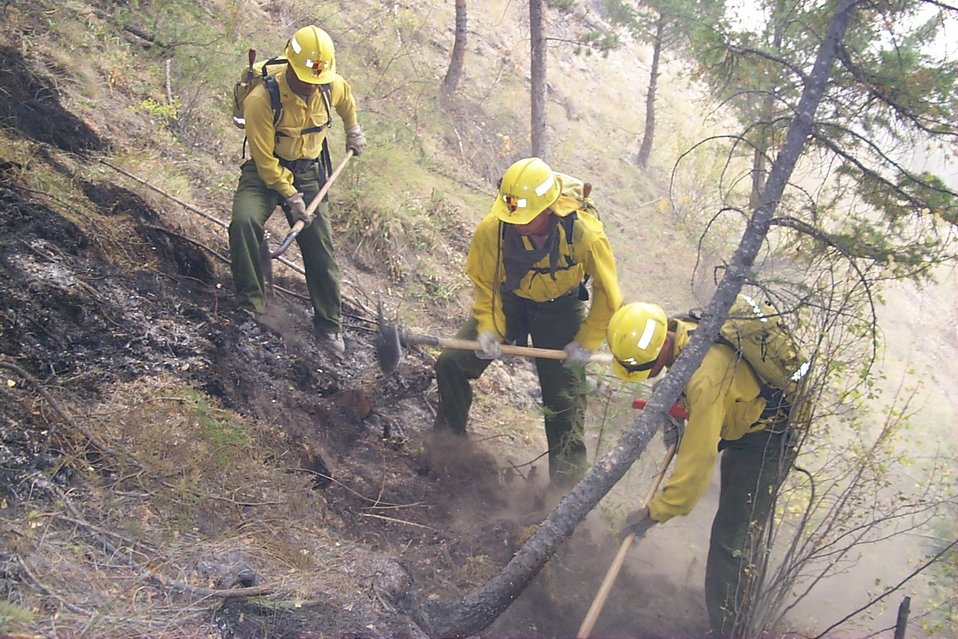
Line crew Fire Clearwater Fire Salmon Field Office USRD Upper Snake River District